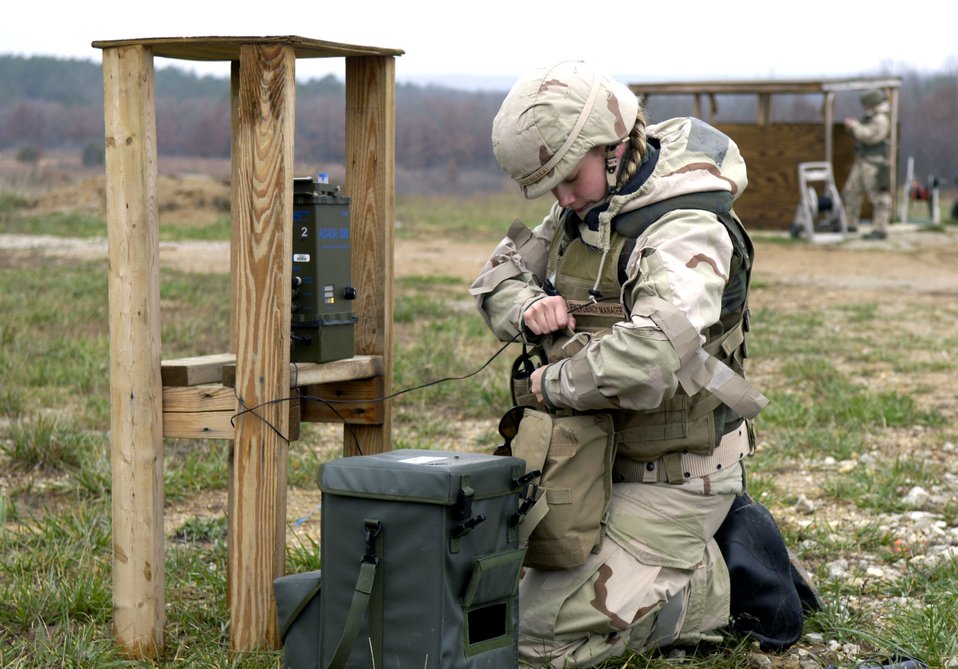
Readiness troops train for the future

Staff Sgt. Renaissance Gildea sets up threat-detection network Nov. 16 during a readiness exercise at Fort Leonard Wood, Mo. The exercise is designed to give readiness Airmen training scenarios developed from lessons learned during operations Iraqi Freedom and Enduring Freedom. The two-day exercise is the part of a two-week training class here.